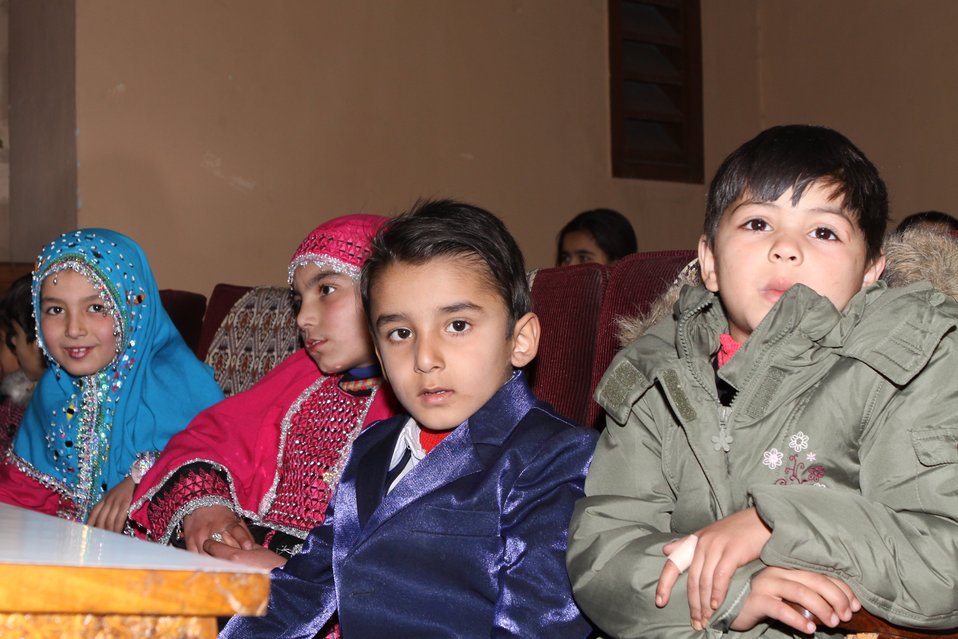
Community Health Workers Celebrated

Kabul, Afghanistan | December 5, 2010 — In support of the United Nations designated International Volunteer Day for Economic and Social Development, Afghanistan’s Ministry of Public Health celebrated its annual Community Health Worker Day today. Acting Minister of Public Health Dr. Suraya Dalil, USAID Senior Deputy Mission Director Robert Hellyer, other government officials, and international donors joined in recognizing the critical contribution of community health workers in Afghanistan and encouraging them to continue their voluntary support to their communities.
The event praised the contributions of the more than 22,000 volunteers throughout the country who deliver community level health-education, counseling, and services out of village health posts located in private homes. The Ministry of Public Health envisioned that community-based healthcare programs will actively encourage communities and families to adopt healthy lifestyles and behaviors, and provide families access to high quality and socially acceptable preventative medicine and life-saving services.
“We have 22,000 community health workers in Afghanistan that are able to implement the basic and standard medicines. They all have been trained through a job description,” said Minister Dalil. Addressing the health workers, she added, “I am proud and feel powerful that I have people like you.”
USAID-funded health projects collaborate closely with the Ministry of Public Health to improve the health and nutritional status of Afghans, provide quality primary healthcare, and promote healthy behaviors at the community and household-levels. USAID supported the training of more than 9,000 of the volunteer community health workers currently working in Afghanistan.
“On behalf of the American people, I congratulate the Community Health Workers for their diligence to gain the skills and knowledge necessary to serve their communities in this important role,” said USAID Senior Deputy Mission Director Hellyer. “USAID strongly supports community based health care and believes that quality community-based health services are essential to reaching Afghanistan’s Millennium Development Goals.”
To support the Basic Package of Health Services, USAID assisted in developing the community health worker training manual, helped train community health worker supervisors and master-trainers, facilitated in-service training, and produced and developed reporting tools, job aids, and education materials.